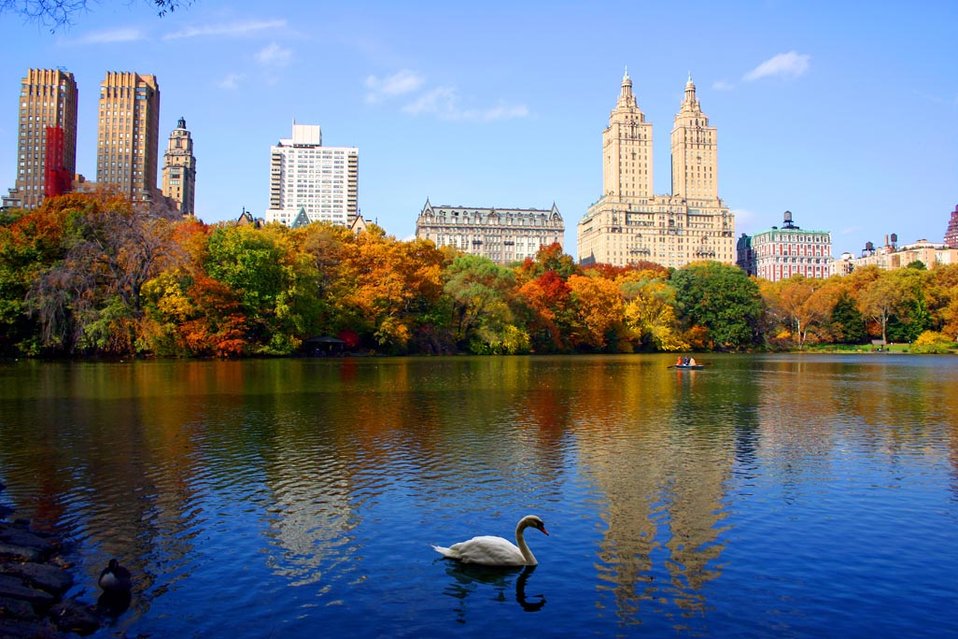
Uploaded by request of Du He Ping.